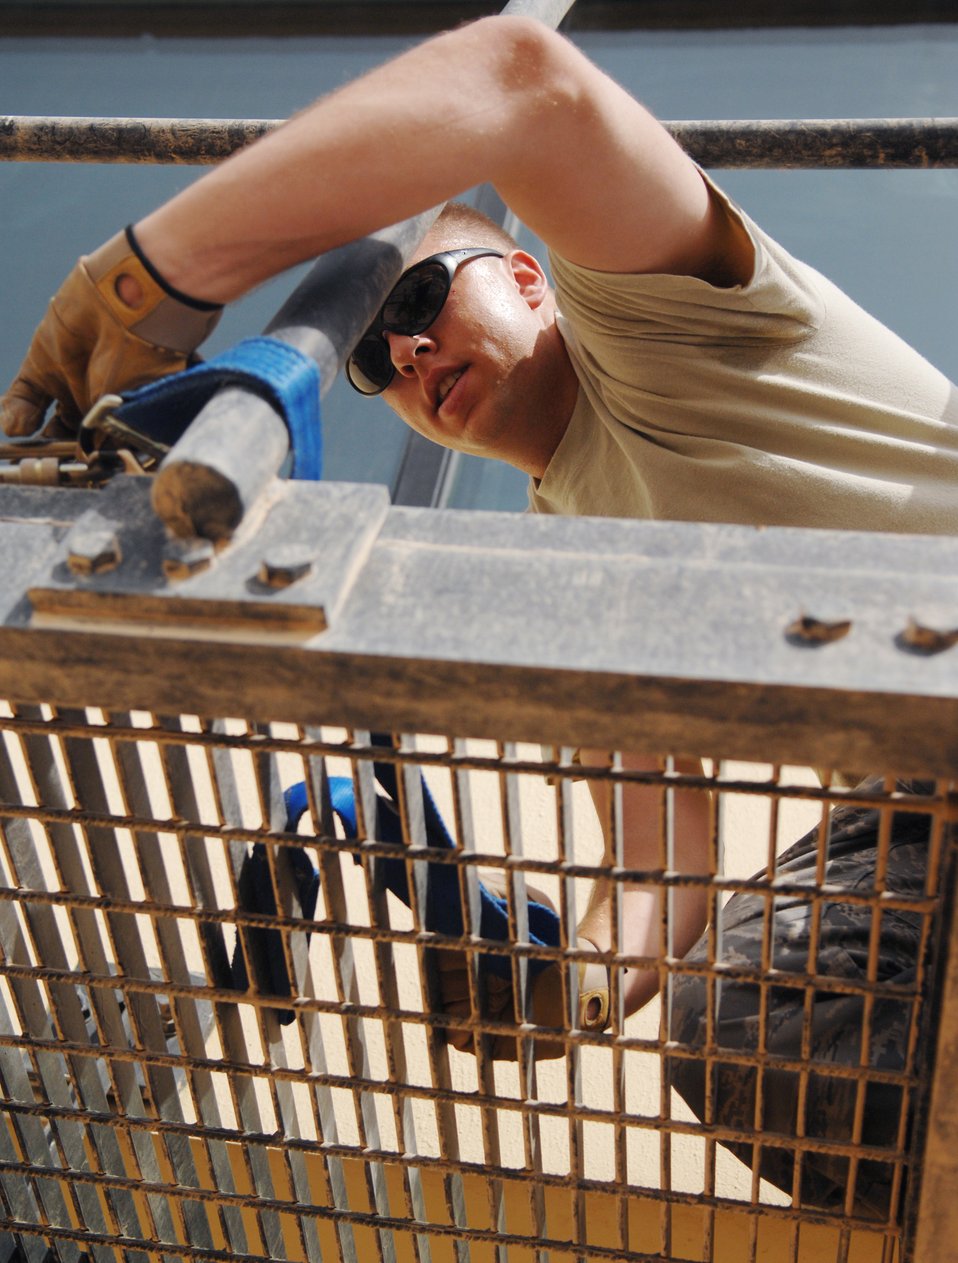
Balad firefighters rappel tower

Airman 1st Class Wesley Stegmaier fastens a safety harness before a rappelling training exercise at the control tower at Joint Base Balad, Iraq, Aug. 20, 2009. Airman Stegmaier is a firefighter with the Air Force Reserve Command's 442nd Expeditionary Civil Engineer Squadron.